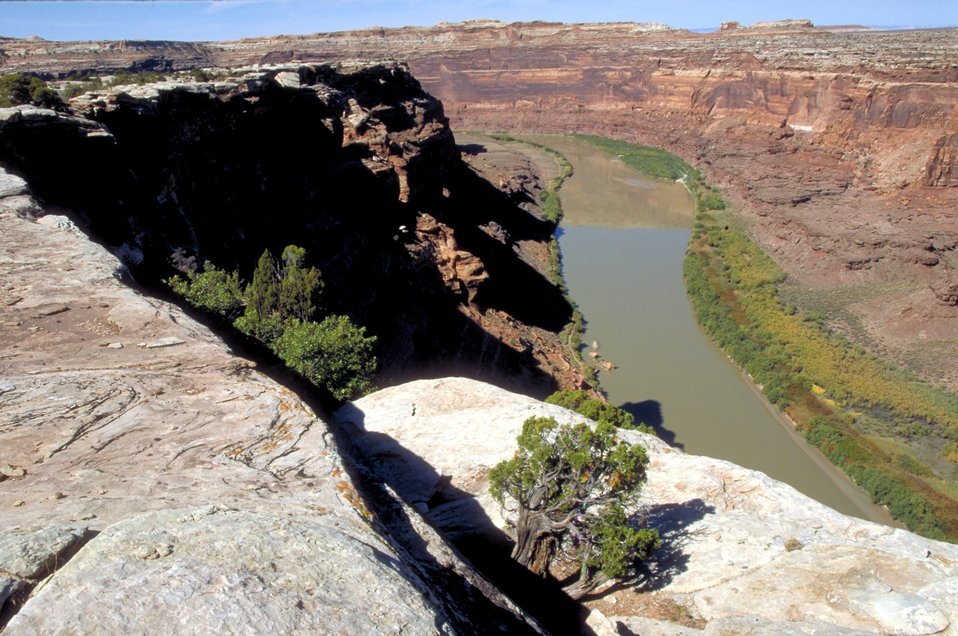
Green River at Bowknot Bend near Moab, Utah.